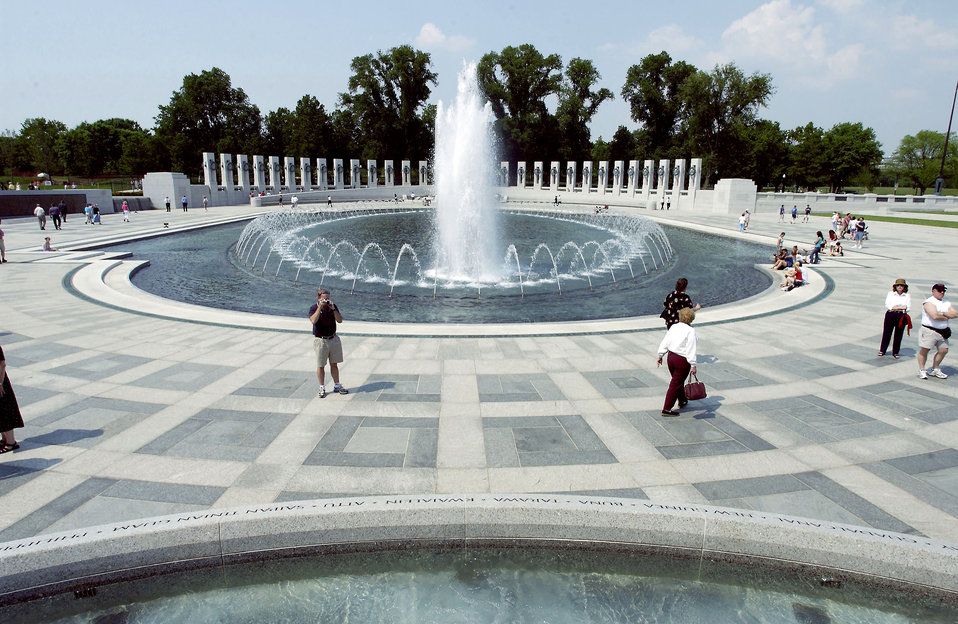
World War II Memorial

WASHINGTON -- The World War II Memorial is nestled between the Lincoln Memorial and Washington Monument on the National Mall here. Congress authorized the memorial in 1993 and construction began in September 2001. It will be officially dedicated Memorial Day weekend.